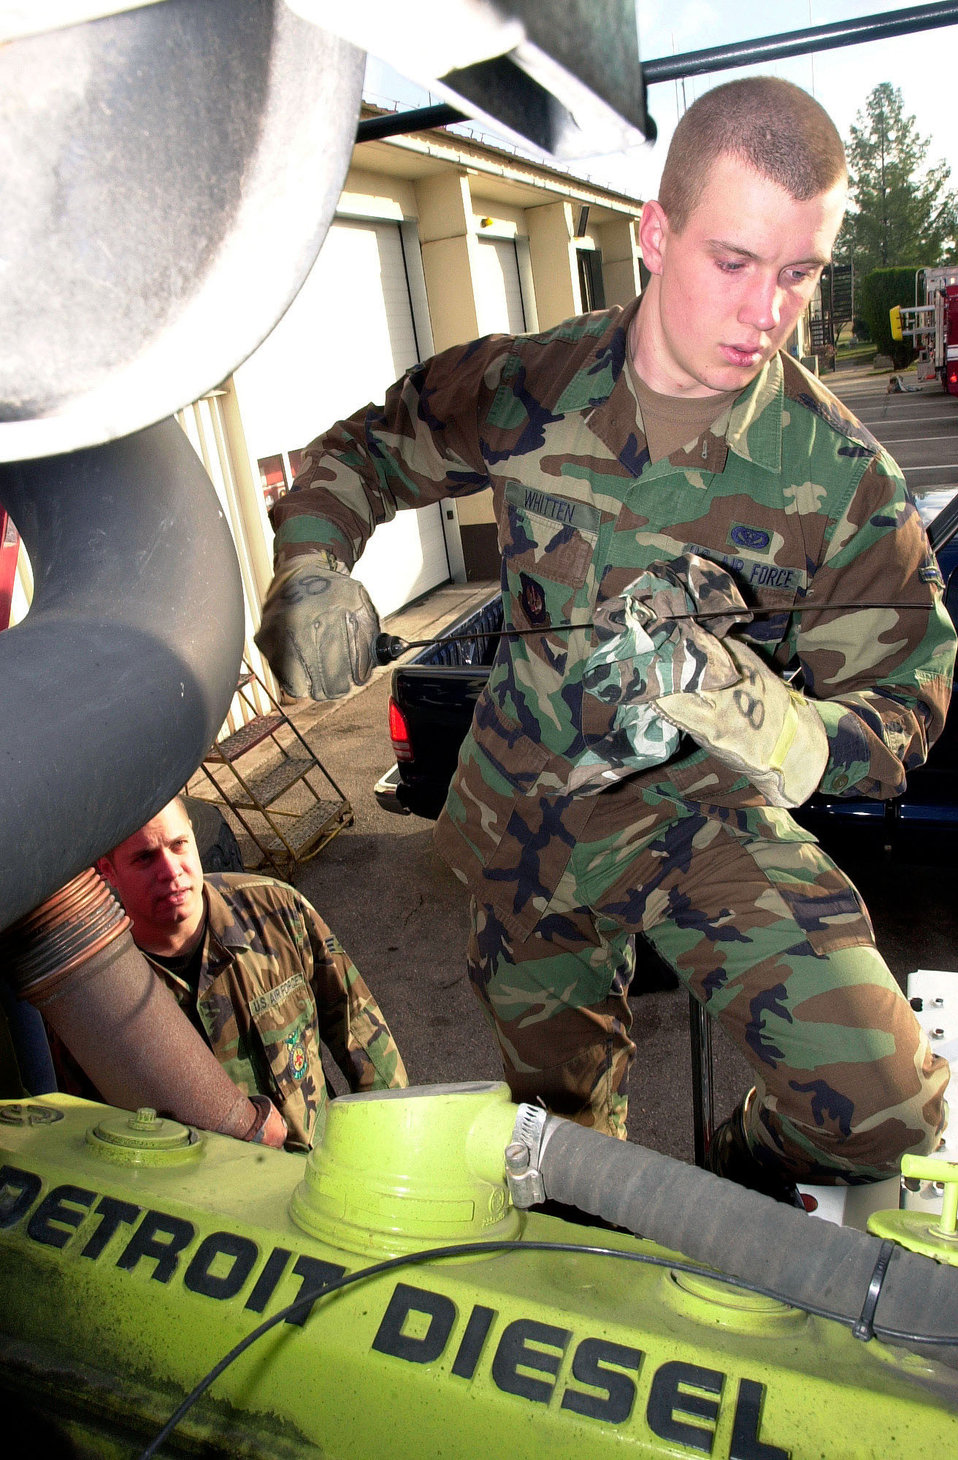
Check the oil

AVIANO AIR BASE, Italy -- Airman Brent Whitten, Fire Fighter apprentice, 31st Civil Engineer Squadron, wears safety gloves while checking engine fluids during routine checks April 7, 2003. The oil is cleaned off of the measurer with a clean rag prior to testing for correct fluid levels. The routine checks of engine fluids are one of the checks routinely performed to maintain optimal performance.